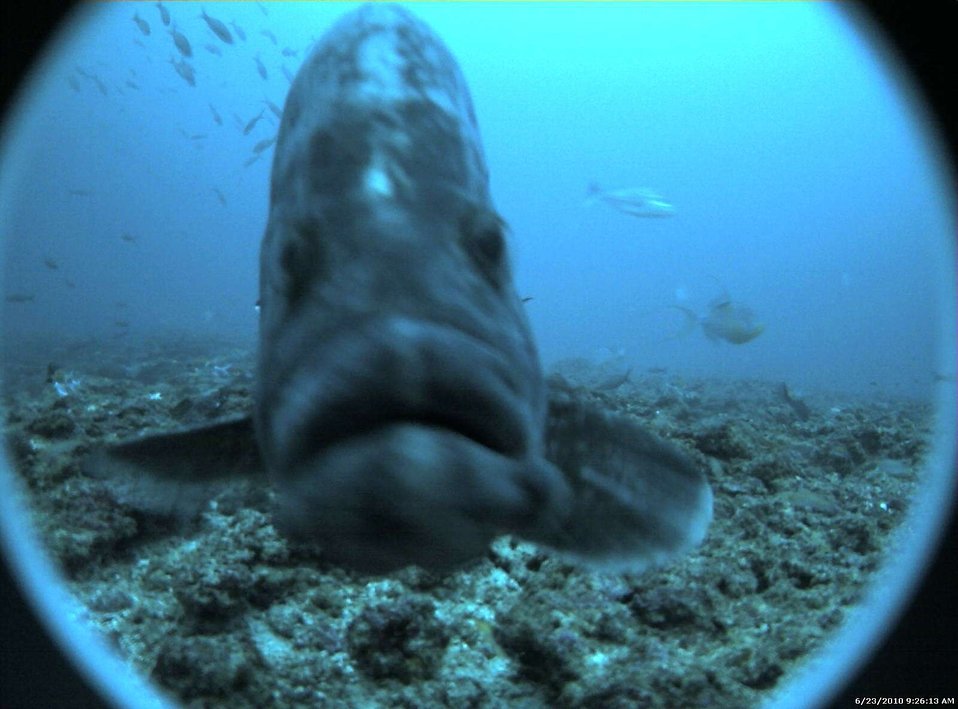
Marbled grouper (Dermatolepis inermis)